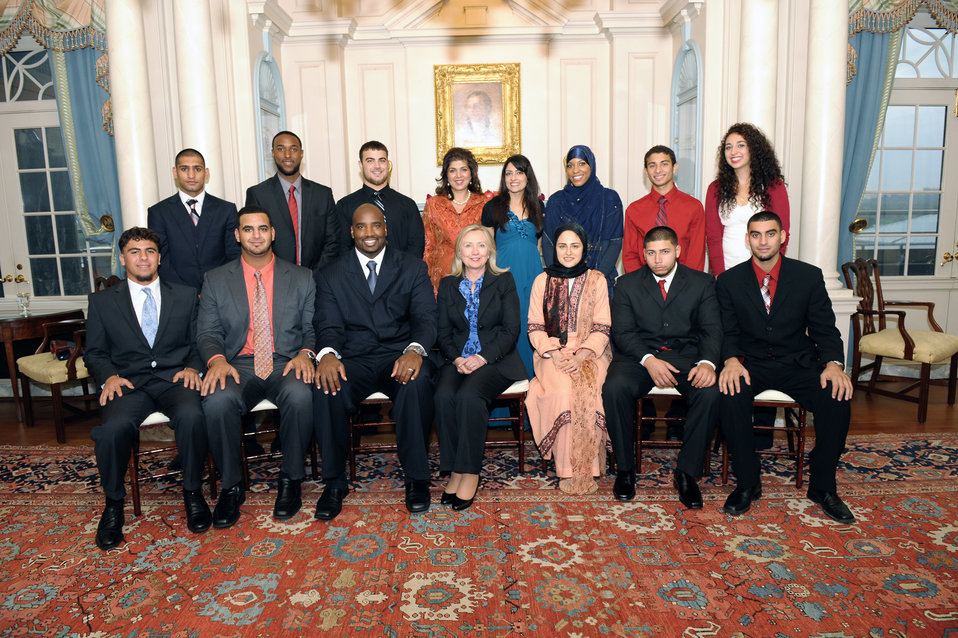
Secretary Clinton Hosts a Reception Marking Eid ul-Fitr

U.S. Secretary of State Hillary Rodham Clinton hosts a reception marking Eid ul-Fitr, at the U.S. Department of State in Washington, D.C., on September 7, 2011.